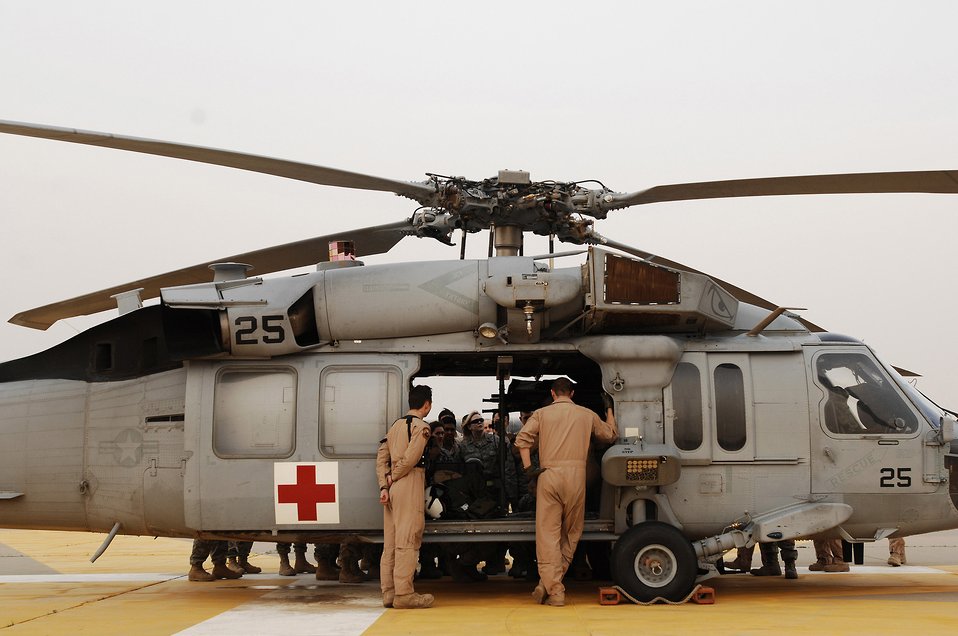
Litter training key to patient handling

Navy Petty Officer 3rd Class Eric Uhden (left) and Navy Petty Officer 2nd Class Jordan Schuster peer through an open door of a MH-60 Sierra helicopter while Airmen from the 386th Expeditionary Medical Group traind on the litter management system of the helicopter Feb. 18 at a Southwest Asia air base. The training familiarized medics on the loading and extracting techniques of patients for medical evacuation missions in support of operations Enduring Freedom and Iraqi Freedom.